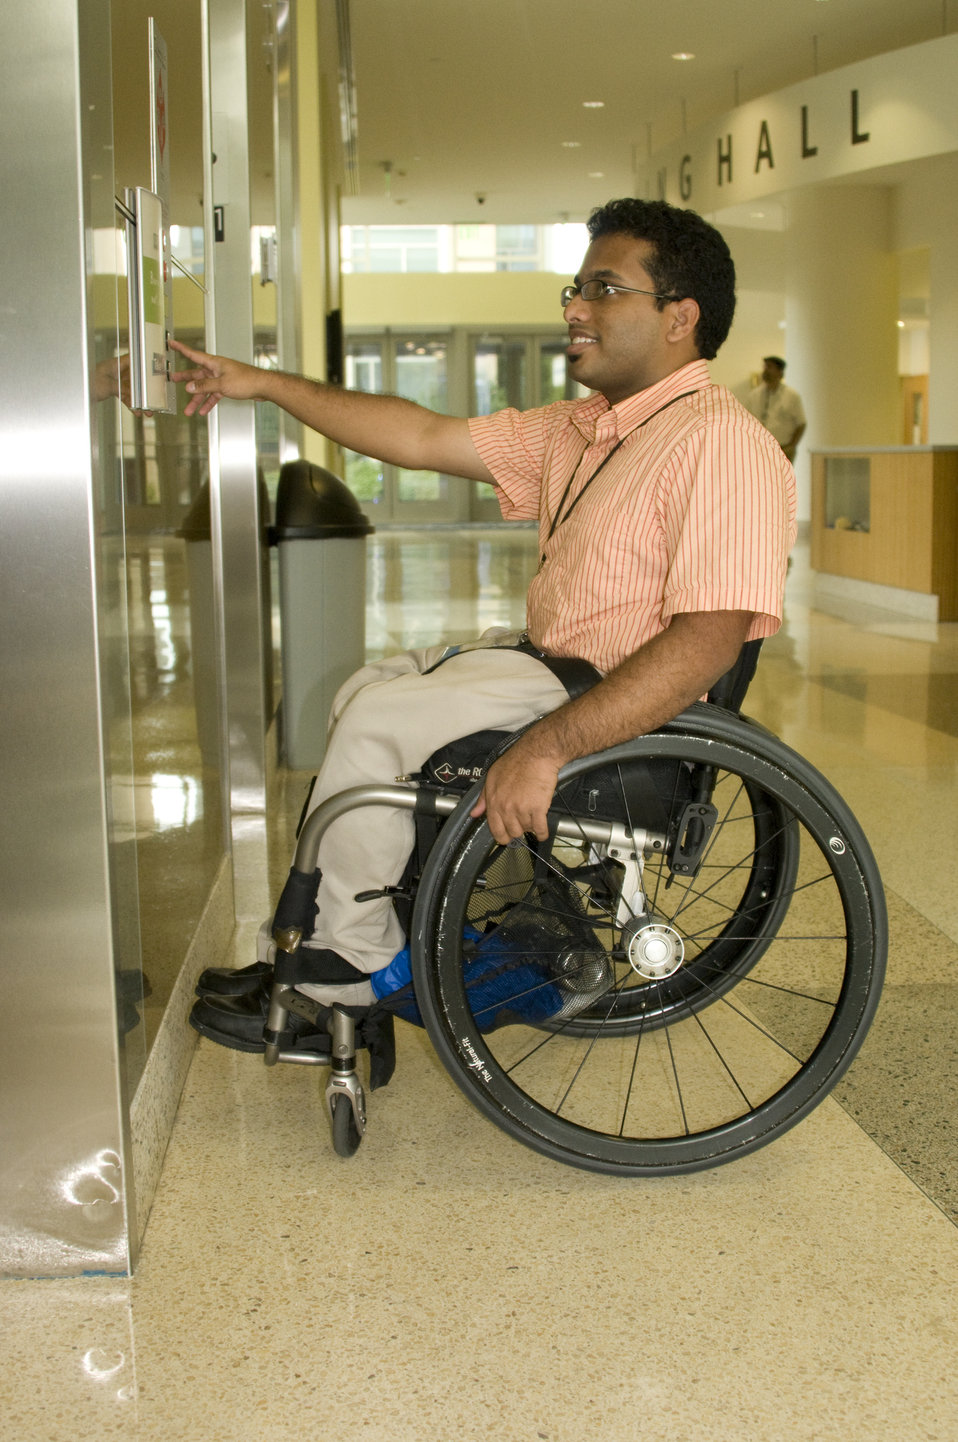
Seated in a wheelchair, the man depicted here was in the process of hailing an elevator from the first floor of one of the Centers for Disease Control and Prevention's (CDC) campus facilities. He was pressing the 'Up' call button, and was looking at the lighted floor indicator above the doors, as he awaited the arrival of an elevator car.